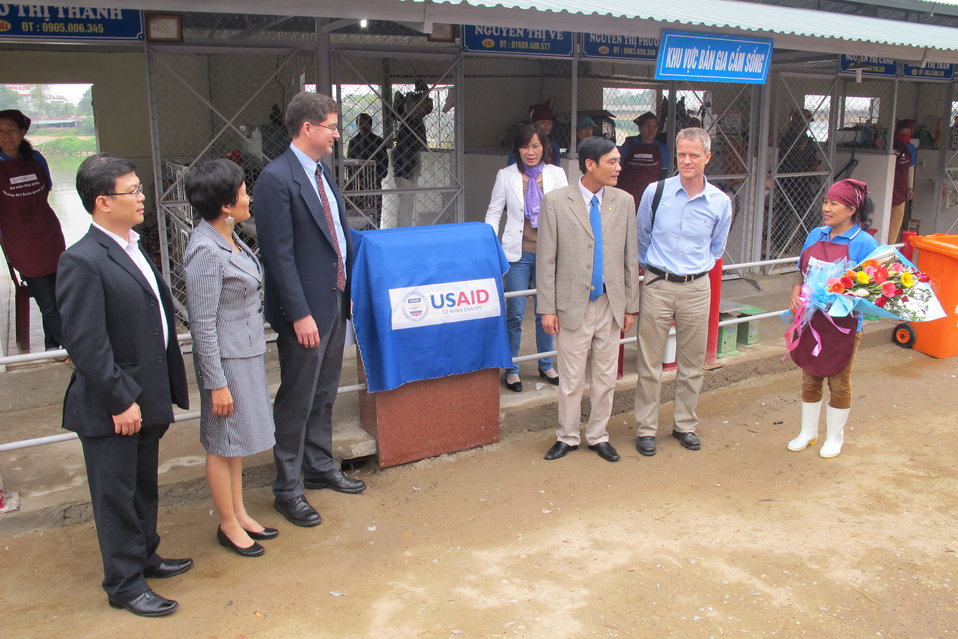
Promoting Hygiene and Sanitation at Dong Ha Poultry Market